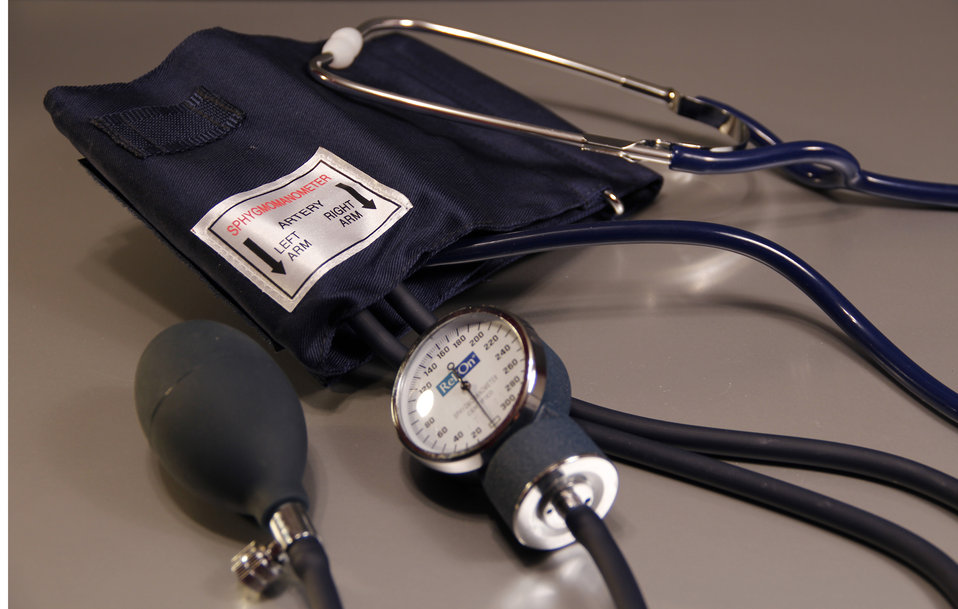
In order for a healthcare provider to measure a patient's blood pressure a sphygmomanometer will be used. Pictured here, this device consists of a pressurized cuff that encircles the patient's upper arm, and a monitor, which indicates changes in pressure within the cuff.